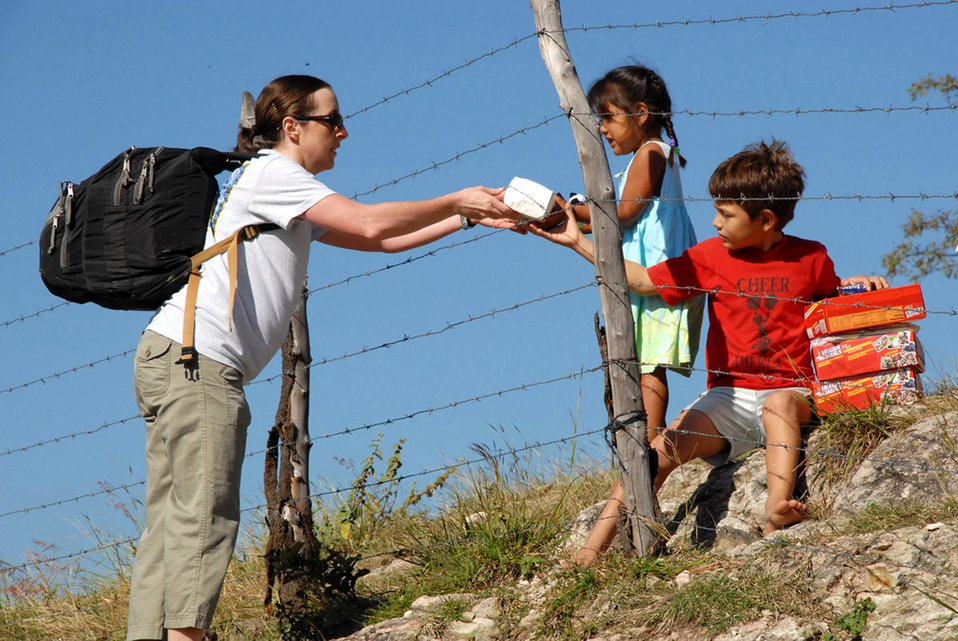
Hikers deliver food to Hondurans

Capt. Angela Freeman hands food to children Feb. 2 during the latest chapel hike through the mountains surrounding Comayagua, Honduras. More than 400 servicemembers from Soto Cano Air Base, Honduras, have delivered more than 2.6 tons of food to approximately 2,200 people. The hikes have proved so popular that they have become a monthly event at .